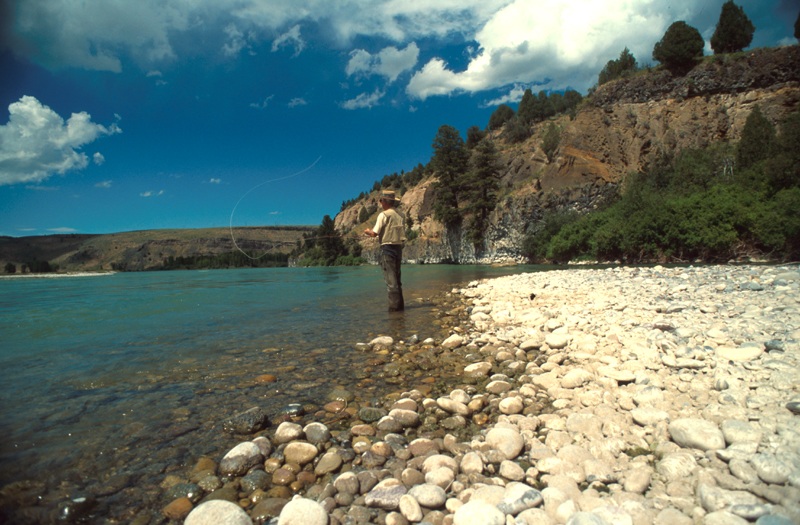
South Fork of the Snake River